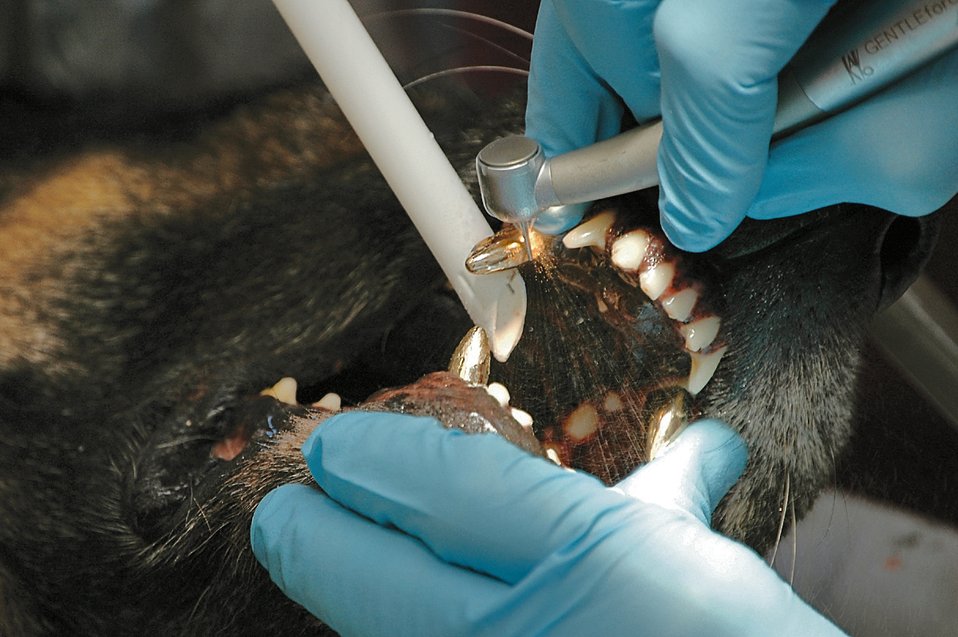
Working dog receives 'canine' treatment

TYNDALL AIR FORCE BASE, Fla. (AFPN) - Dentist Capt. (Dr.) Lawrence Horne grinds down the gold crown on the upper canine to ensure an adequate gap exists between the upper and lower canine. Captain Horne is a general dentist with the 325th Aeromedical-Dental Squadron.